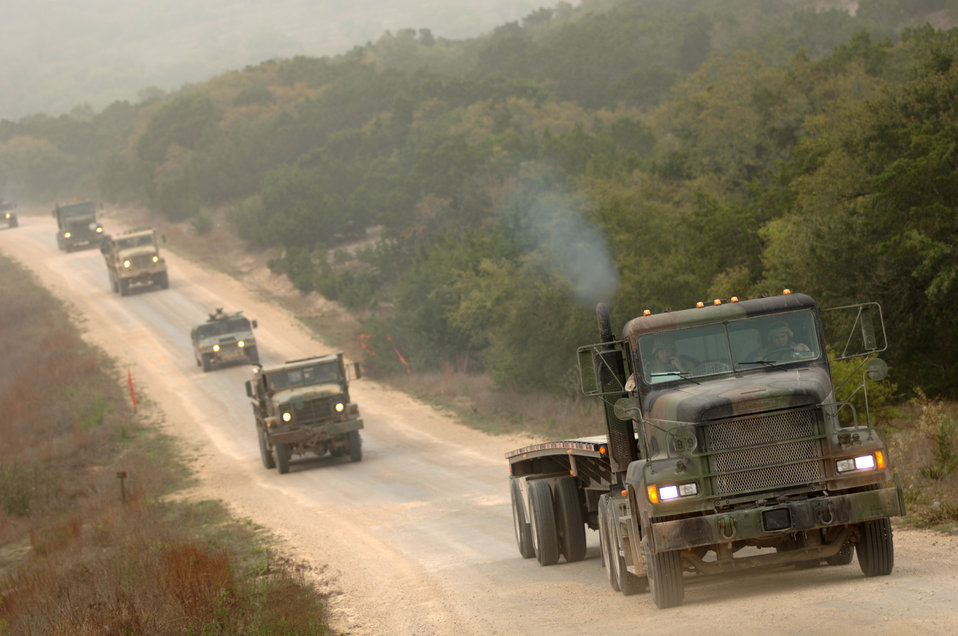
Convoy tactics

Airmen train in up-to-date convoy tactics and techniques in the Basic Combat Convoy Training course at Camp Bullis, Texas, on Monday, April 3, 2006. The course is designed to keep Airmen battlefield focused and well-trained for convoy operations.